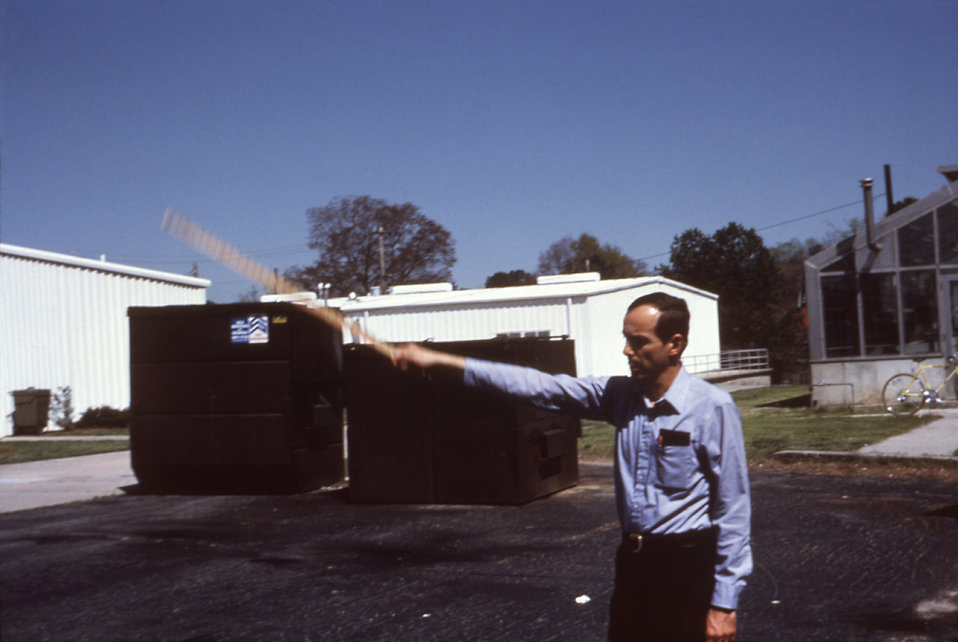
This 1981 photograph depicted a field technician as he swung a yardstick through an insecticide spray in the correct manner used when one is quantitatively measuring the amount of insecticide dispersed from an ultra low volume (ULV) fogger.